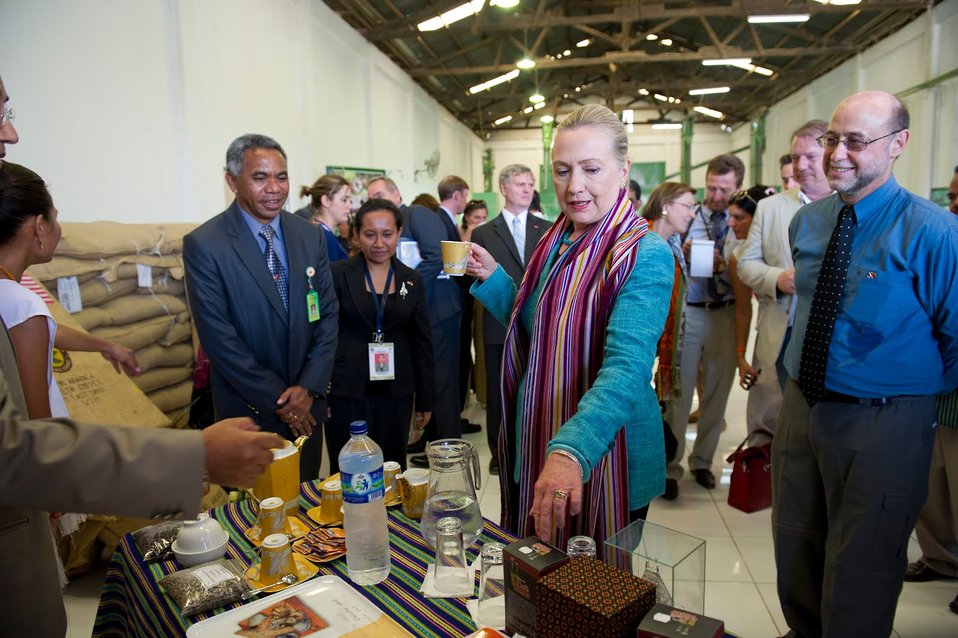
Secretary Clinton at Cooperativa Cafe Timor

U.S. Secretary of State Hillary Clinton asks questions about Cooperativa Cafe Timor's organic coffee in Dili, Timor-Leste, September 6, 2012. USAID launched the coffee cooperative project in 1994 to raise farmers' incomes.